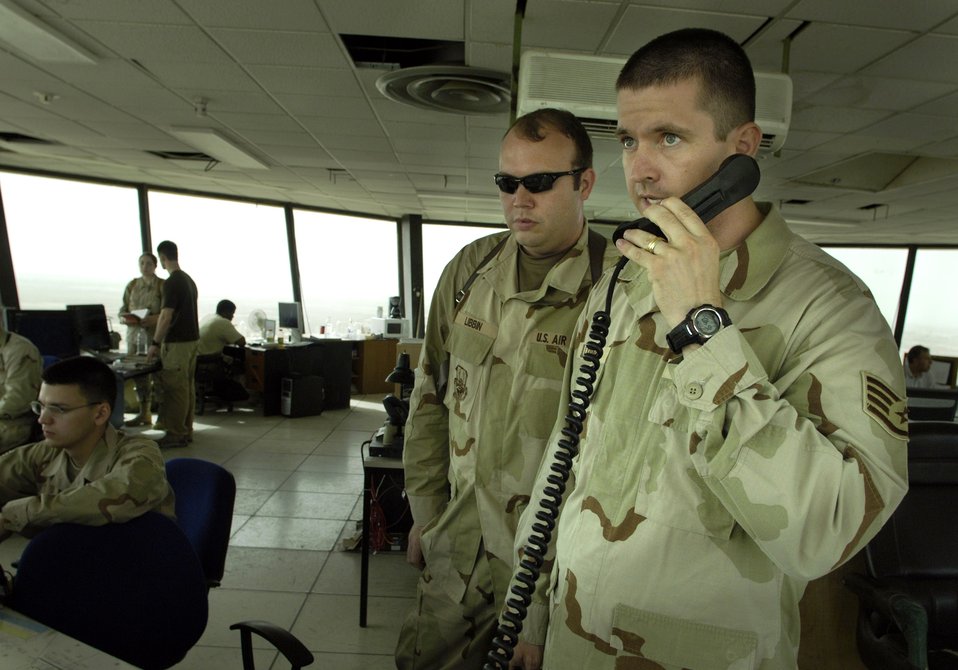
Airmen, Iraqi air traffic controllers work together

Air traffic controller Staff Sgt. Troy Dilldine manages one of the more than 14,000 aircraft per month currently flying into and out of Baghdad International Airport June 2, as Tech. Sgt. Kenneth Libbin observes. . In addition to manning the control tower and improving the infrastructure and technology in the tower, Air Force controllers are working with Iraqi controllers in an effort to speed the transition from U.S. to Iraqi control of airspace. Sergeant Libbon is deployed from Moron Air Base, Spain, and Sergeant Dilldine is deployed from Incirlik AB, Turkey.